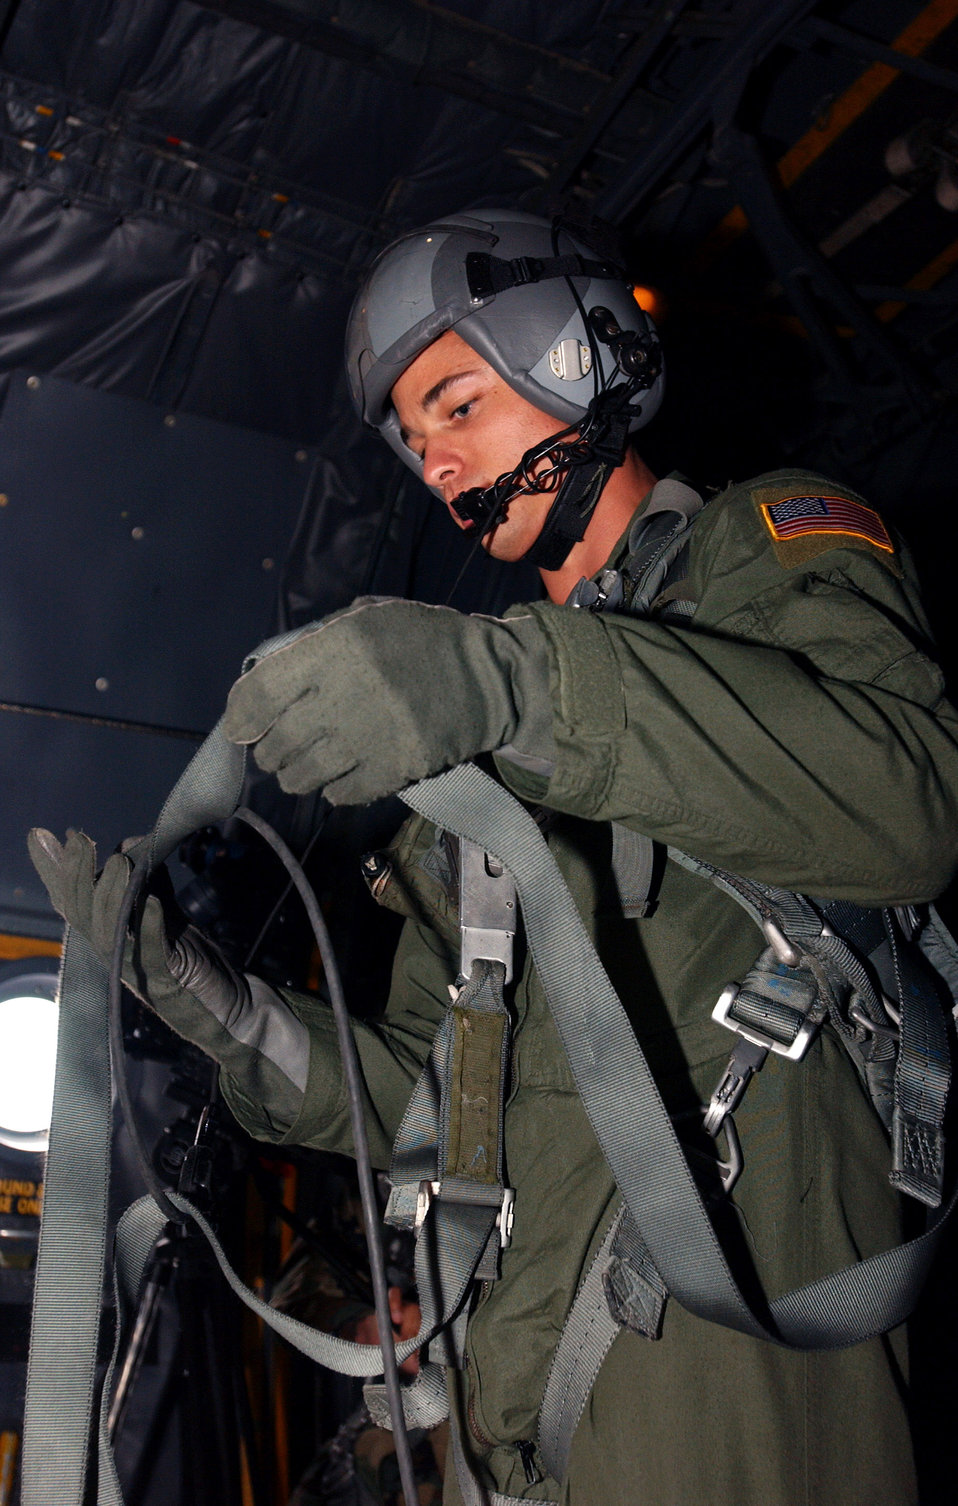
Bringing holiday cheer to many

Senior Airman Joshua Coda prepares to dispatch pallets of toys and supplies from a C-130 Hercules flying over islands in the Western Pacific Dec. 14 during Operation Christmas Drop. The aircrew and C-130 are from the 36th Wing at Andersen Air Force Base, Guam.